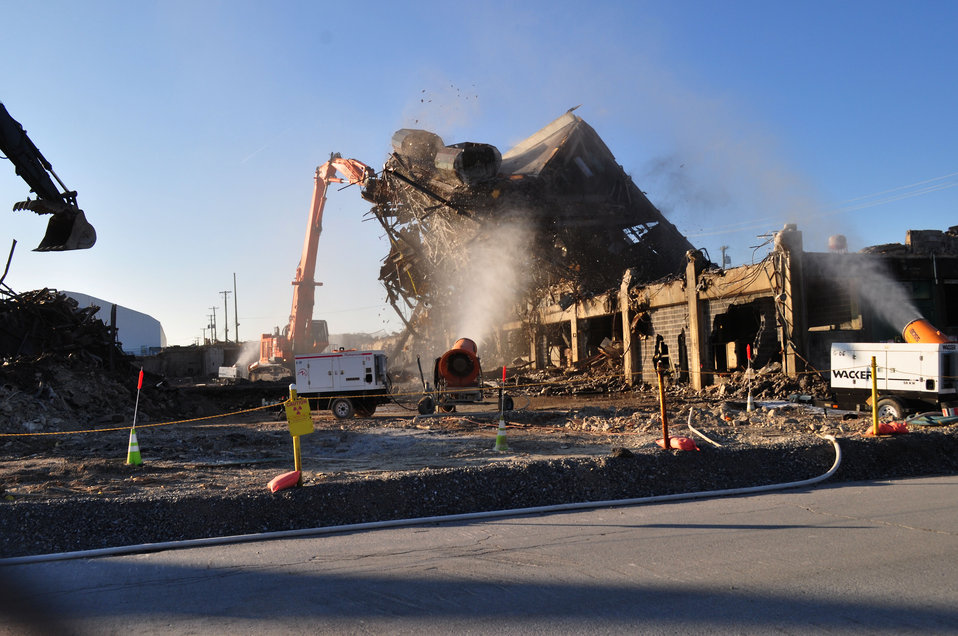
DandD of K-25 North Tower

13-005 DOE photo Lynn Freeny 1-23-2013 ETTP North Tower K-25 Oak Ridge Tennessee